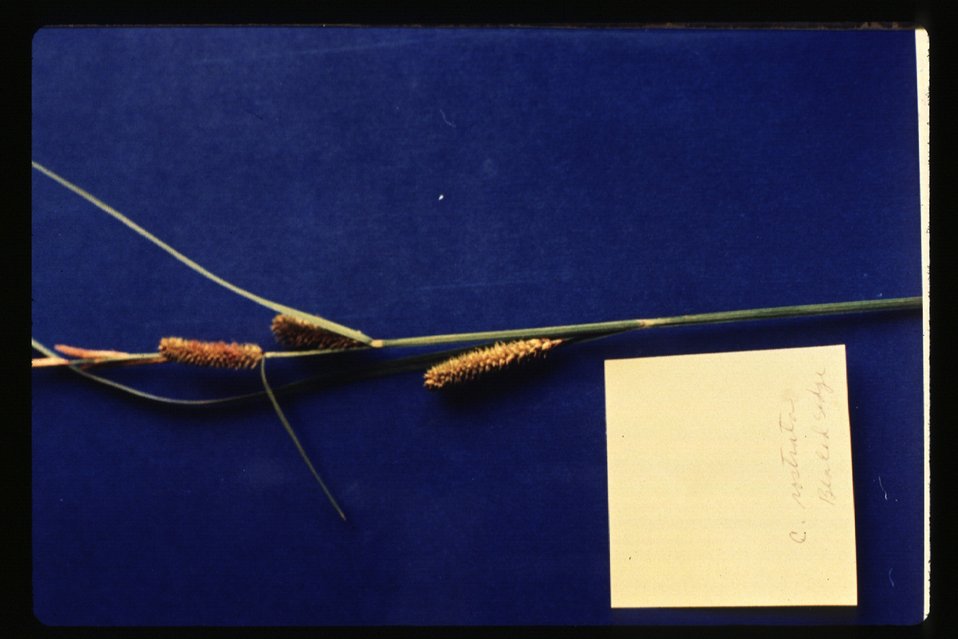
Carex rostrata beaked sedge grass-like